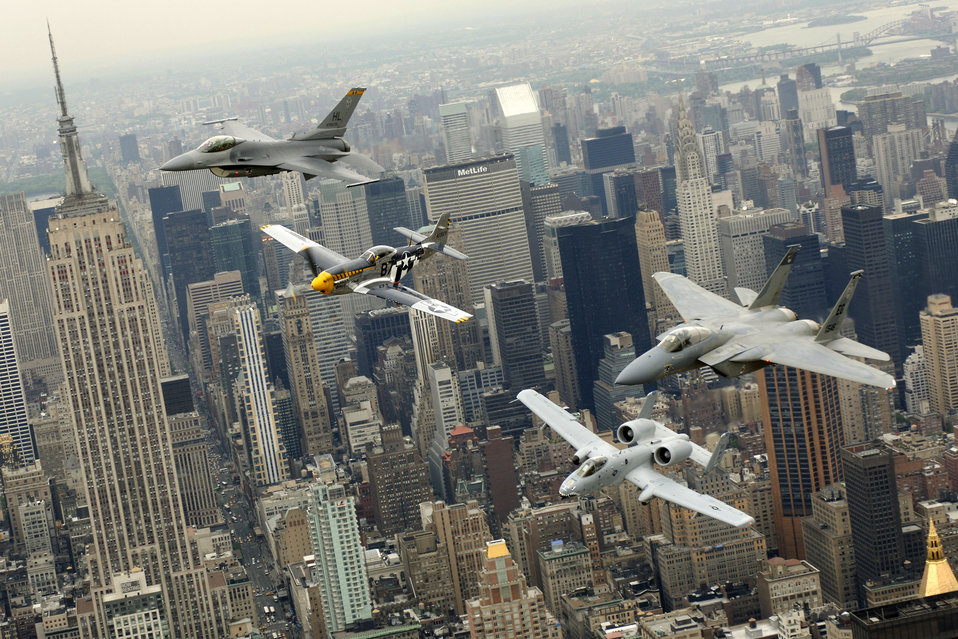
Heritage Flight over New York

A P-51 Mustang, flown by Jim Beasley; an F-16 Fighting Falcon, flown by Maj. Dax Cornelius from Hill Air Force Base, Utah; an F-15 Eagle, flown by Capt. Tony Bierenkoven from Eglin AFB, Fla.; and an A-10 Thunderbolt II, flown by Capt. Jeff Yost of Pope AFB, N.C., fly over New York City on Thursday, May 25, 2006. The